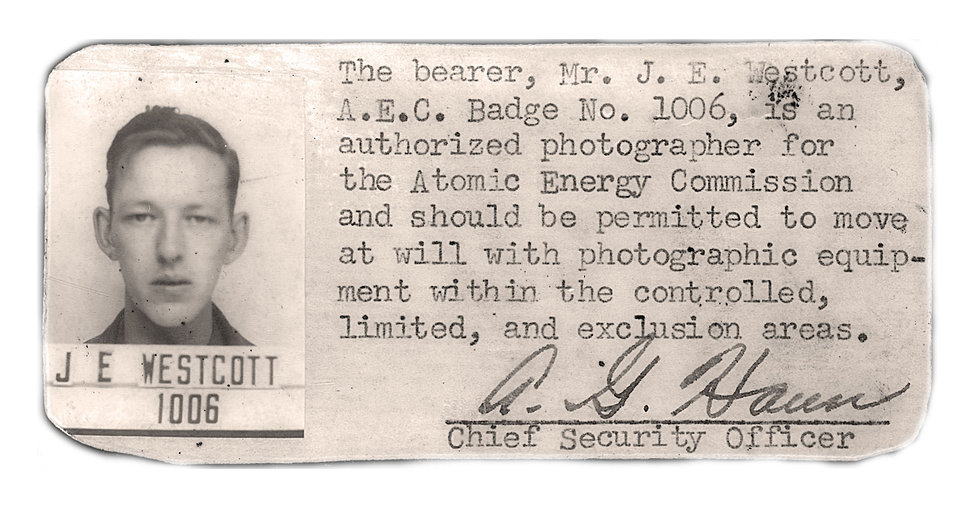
Ed Westcott's Camera Pass 1940s Oak Ridge